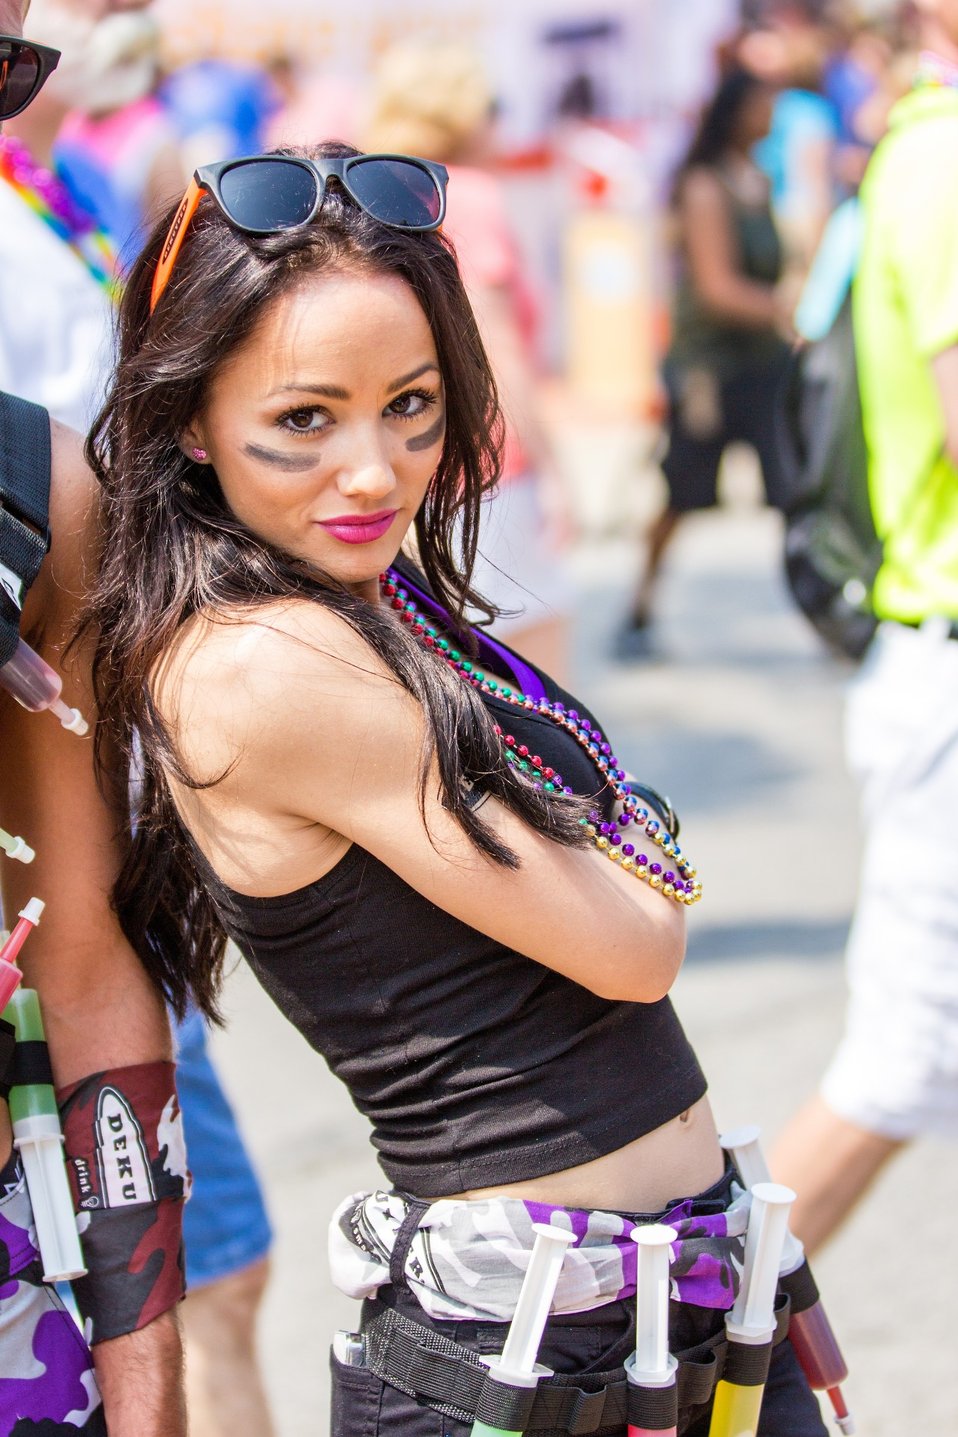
Pride day 2013

Gay pride 2013.